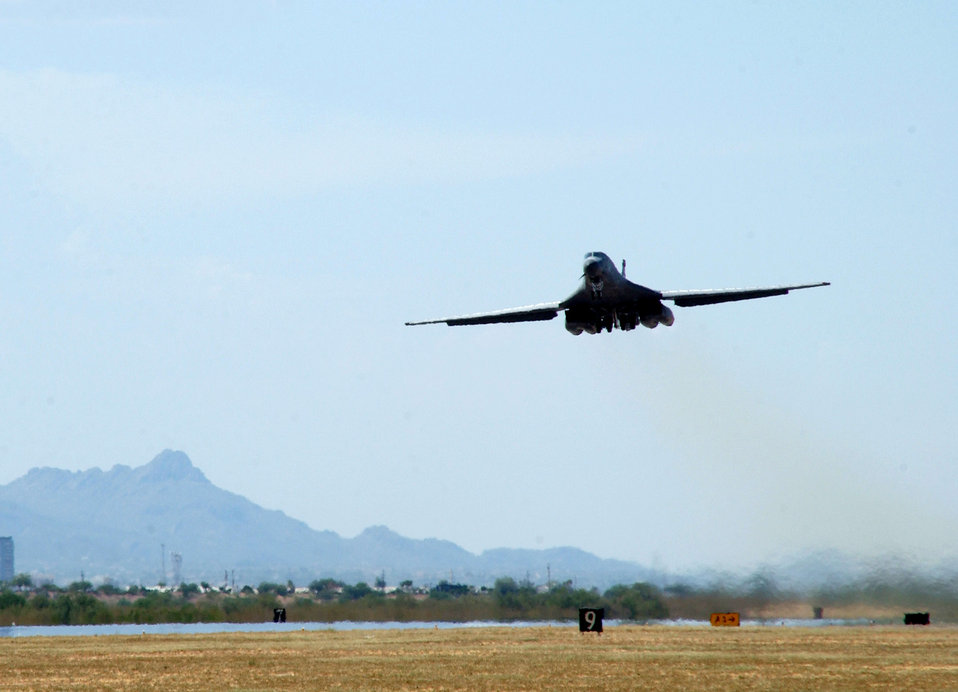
Back in action

DAVIS-MONTHAN AIR FORCE BASE, Ariz. -- Workers from the Aerospace Maintenance and Regeneration Center here and maintainers from the 654th Combat Logistics Support Squadron at Tinker Air Force Base, Okla., have regenerated the first B-1B Lancer. After two months of flight preparations, the B-1B took off Sept. 2 for Dyess AFB, Texas. The Lancer, Serial No. 86-0097, entered storage at the center in April 2003 under the Air Force's B-1B consolidation plan. In early 2004, the commander of Air Combat Command directed the recall of this B-1B to supplement fleet requirements supporting the war on terrorism.